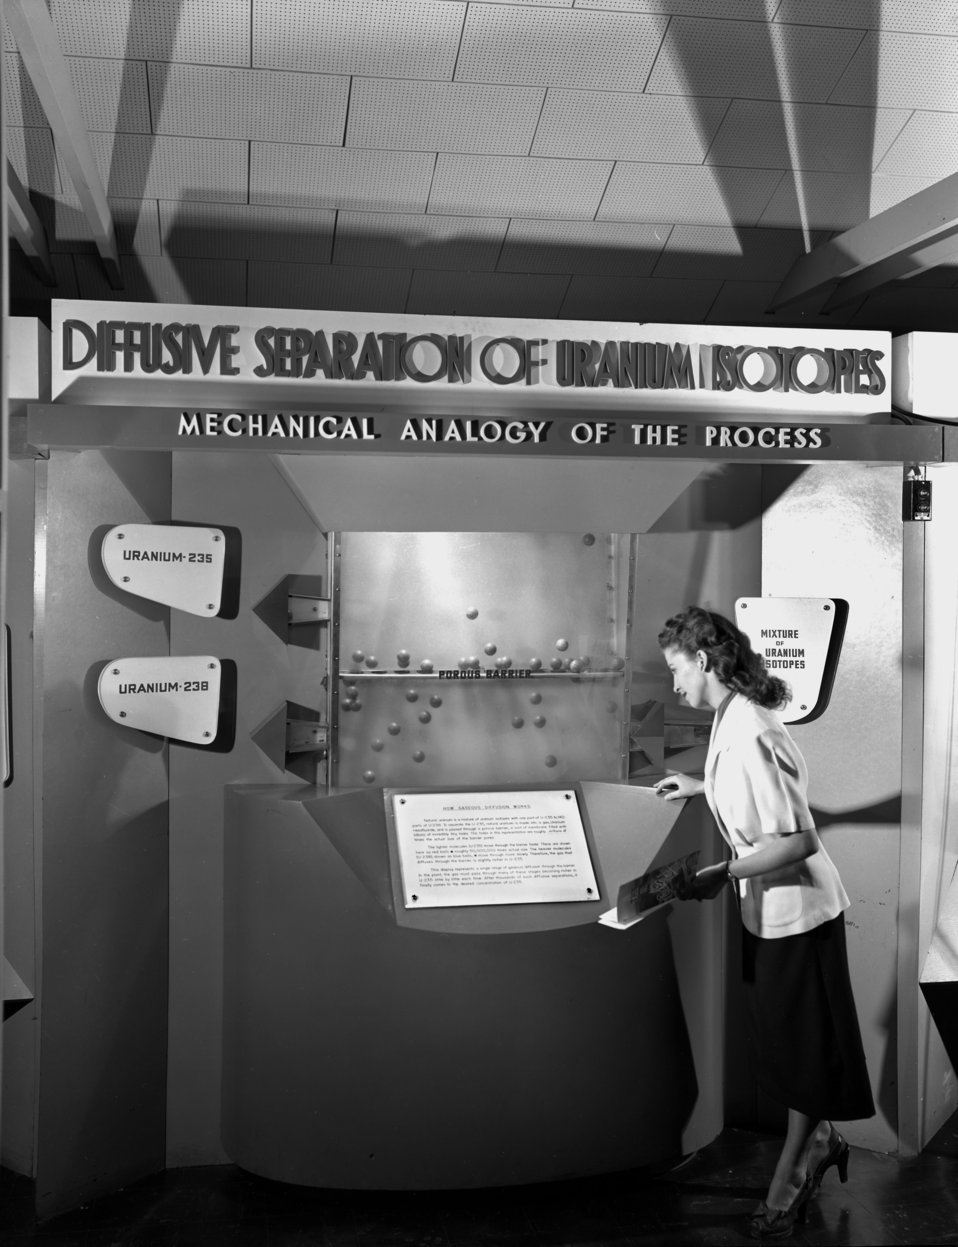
Radiosotope Display AMSE Oak Ridge 1949

5519-6a 5519-6 DOE photo Ed Westcott 4-22-1949 Oak Ridge Tennessee